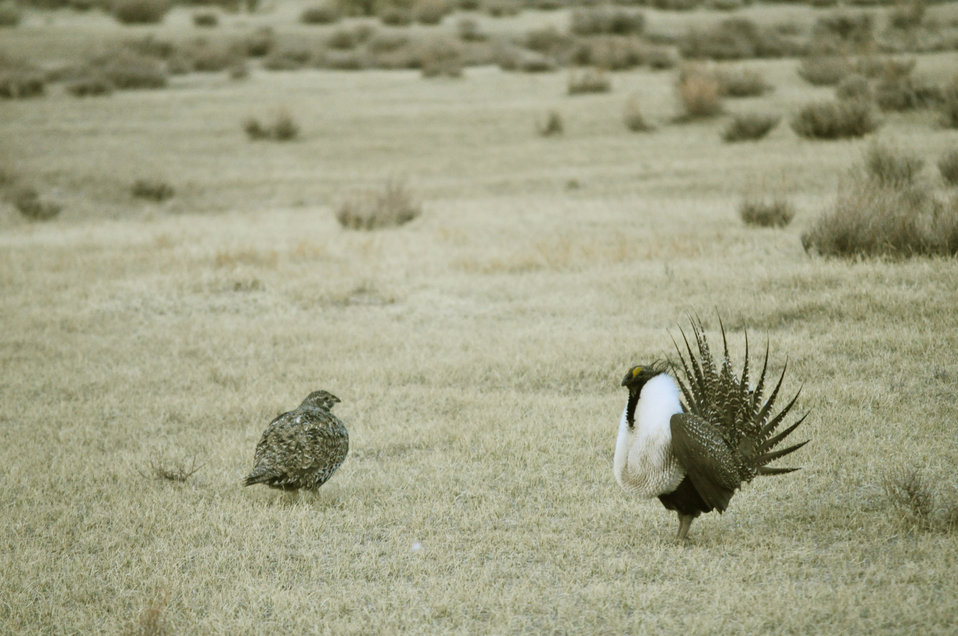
Greater Sage-Grouse

Male greater sage-grouse struts for female at lek (dancing or mating grounds) near Bodie, California.